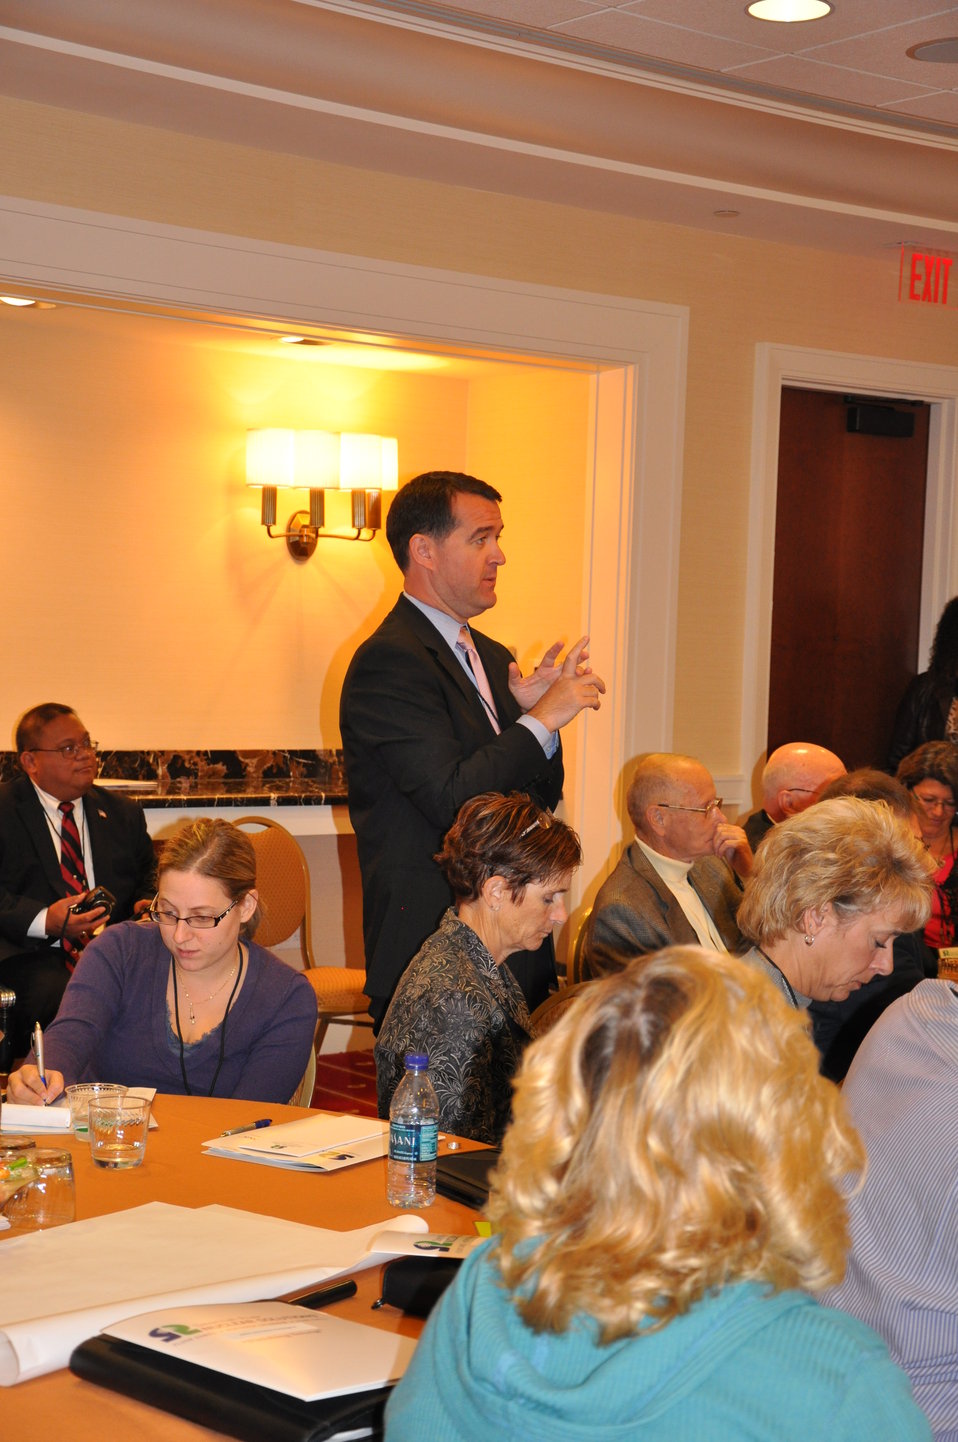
Workforce Transition Arises as Central Theme in Information Exchange

DOE Senior Policy Advisor Colin Jones listens to participants in an Information Exchange breakout session discuss strategies to help transition workers into new employment following the Recovery Act Program.